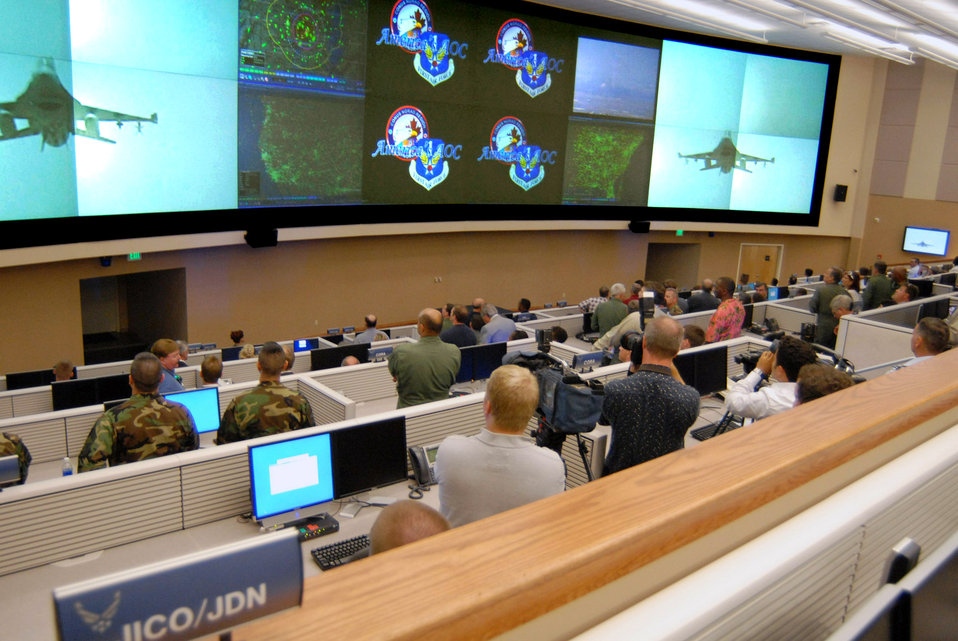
Air operations center opens at Tyndall

Guests look on as a video presentation is displayed on the $3.5 million data wall during the dedication of the new 601st Air and Space Operations Center June 1 at Tyndall Air Force Base, Fla. Airmen at the new center will help protect America's airspace from attack as well as coordinate life-saving relief during natural and man-made disasters.